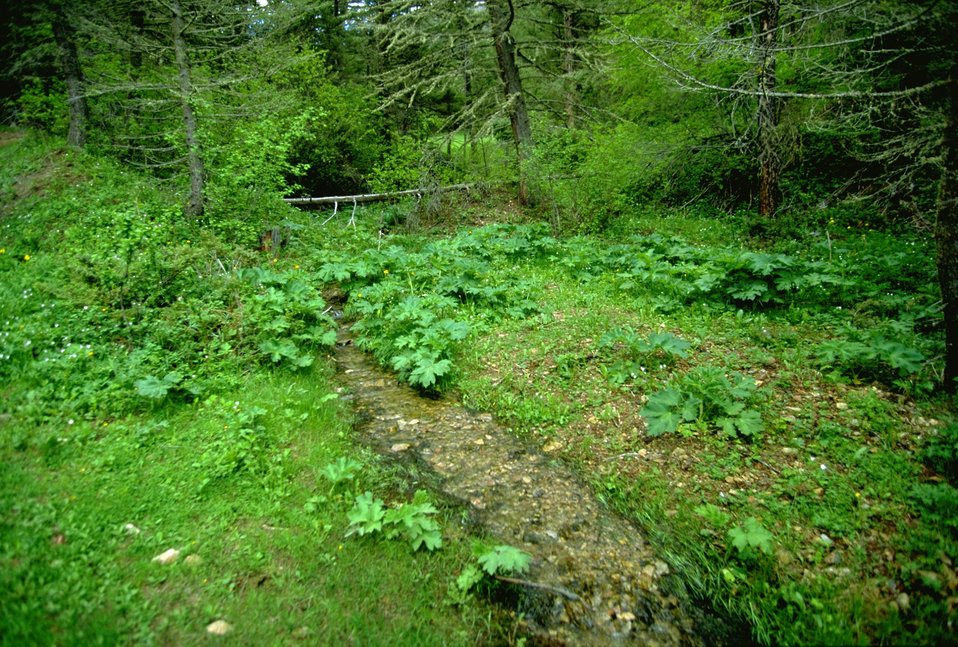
Riparian area in the Judith Mountains